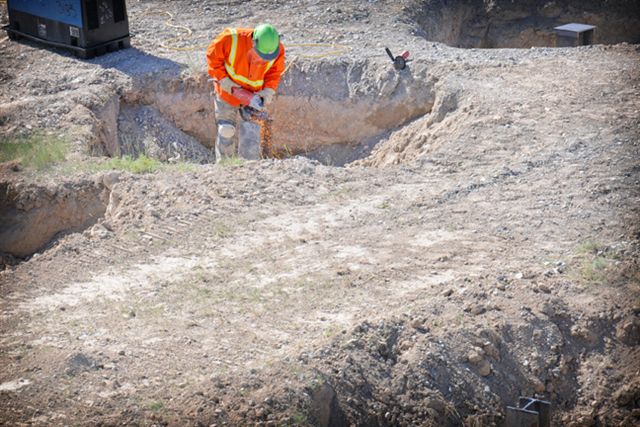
RAN ARP RWMC S127 ARPVII FINISHPILINGS 070610 P6558-012 A